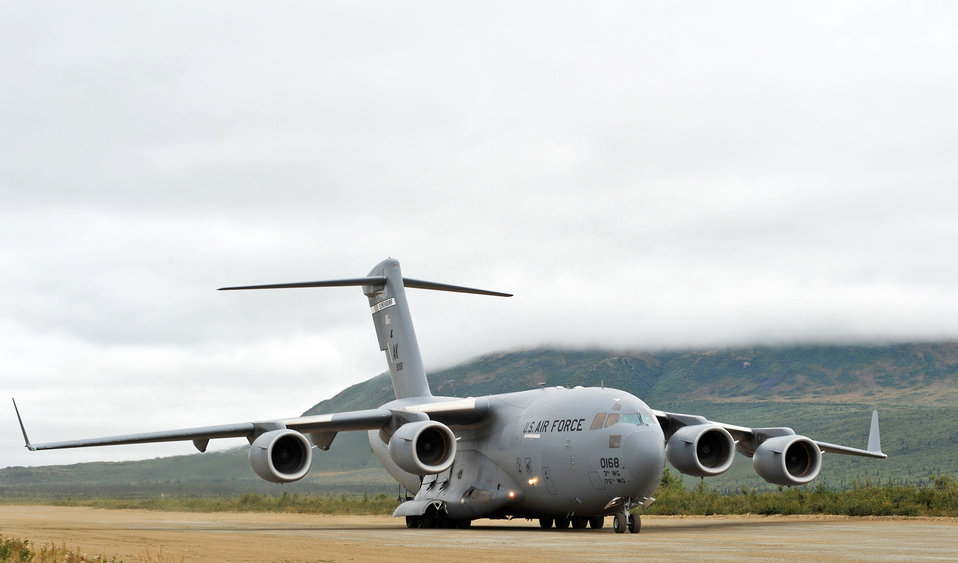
Elmendorf Airmen support Army's Operation Arctic Response

A C-17 Globemaster III from the 517th Airlift Squadron taxies down an dirt air strip Aug. 24 at an unimproved landing strip near Elmendorf Air Force Base, Alaska. The aircraft and its aircrews deployed 120 Soldiers from the 17th Combat Service Support Battalion on Fort Richardson, Alaska, to the remote site during Operation Arctic Response.